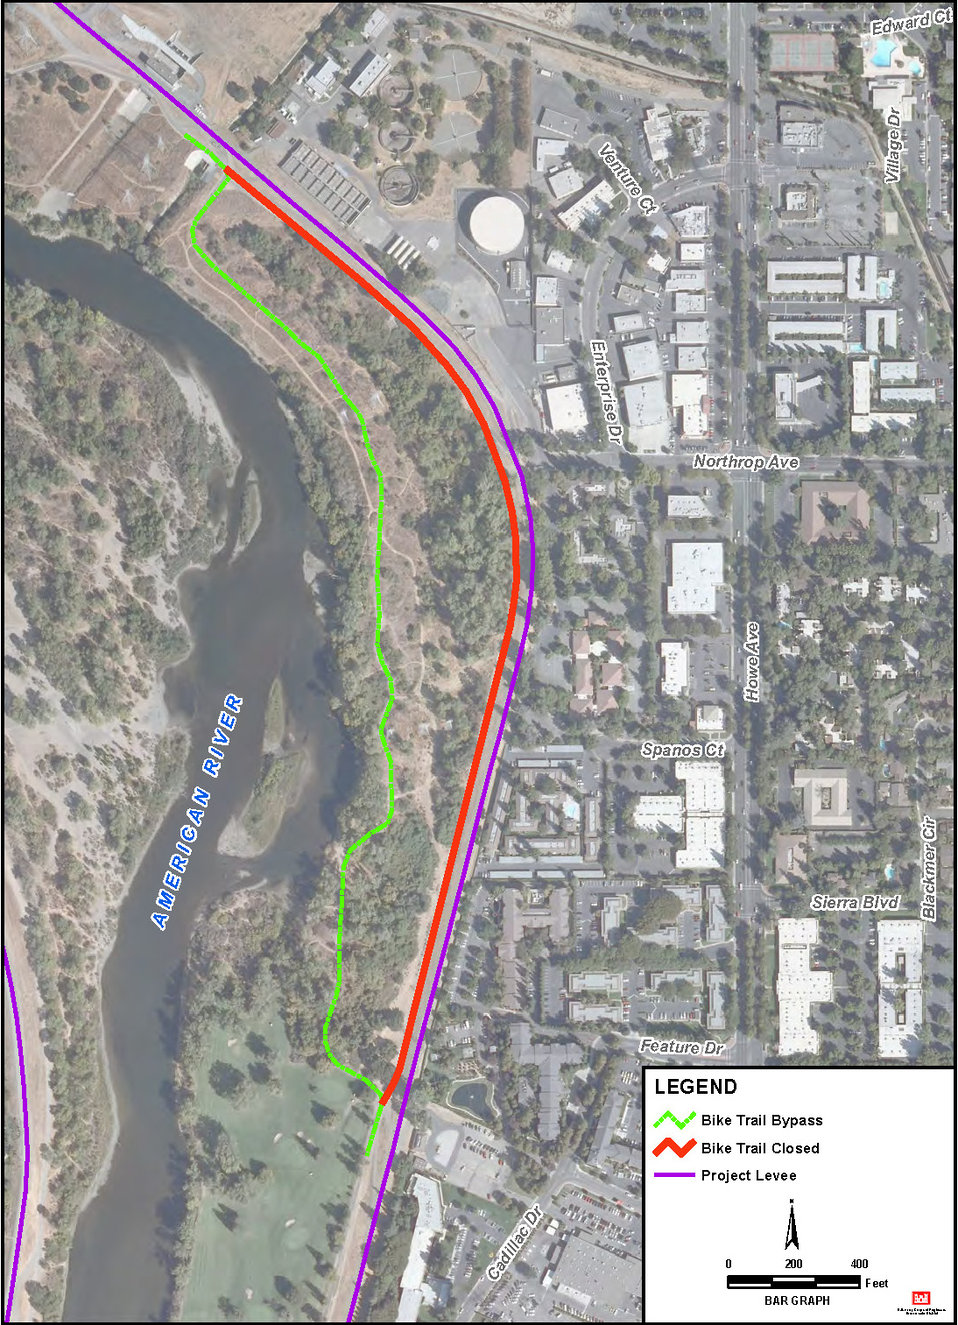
R5 and R6 American River Parkway Trail Detour MAP

Pedestrian and bicycle traffic detours along the American River Parkway Trail reopened near the California State University-Sacramento campus after a U.S. Army Corps of Engineers Sacramento District levee improvement project concluded Oct. 31, 2011. The same detour will be required during spring 2012 when construction begins on another levee improvement site nearby.